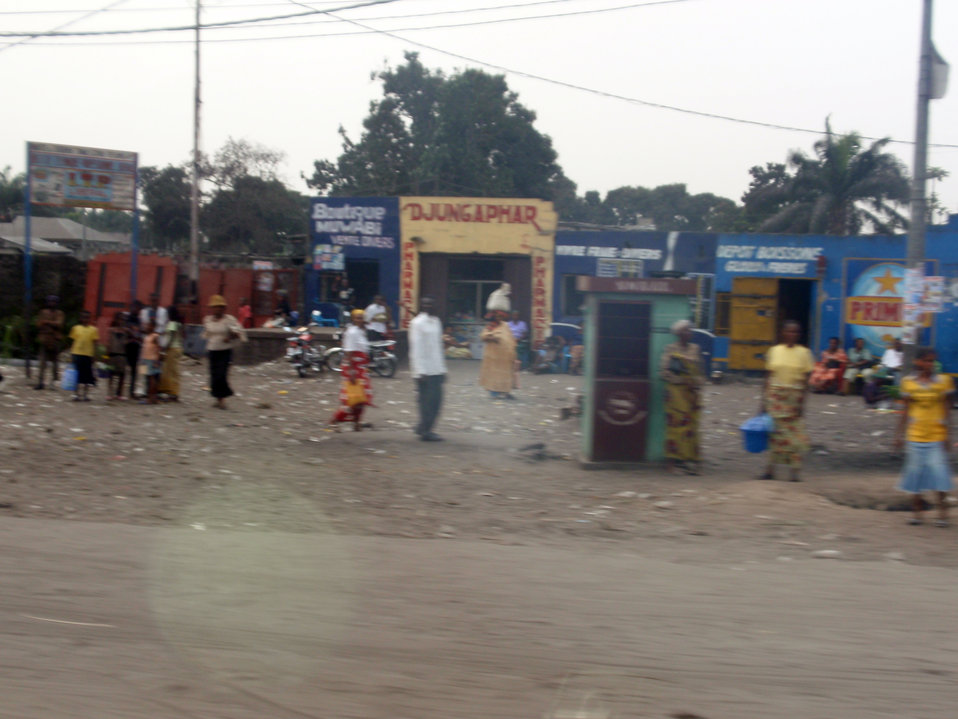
Behind the Scenes: Arrival in Kinshasa

The scene entering Kinshasa from the airport in Kinshasa, Democratic Repbulic of Congo August 10, 2009.